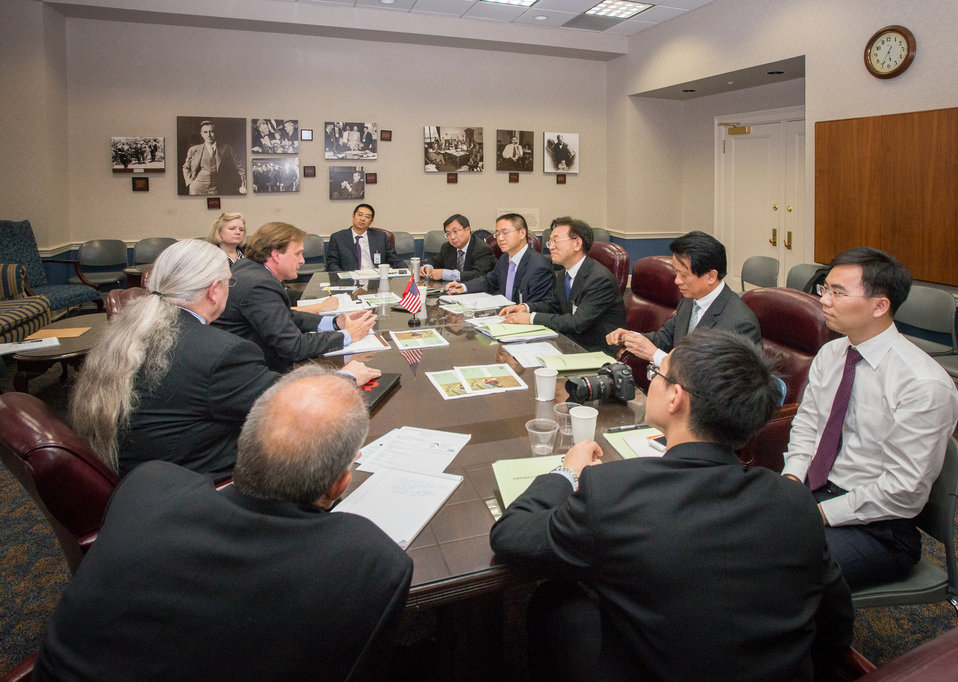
U.S. Department of Agriculture (USDA) Under Secretary for Natural Resources and Environment (NRE) Robert Bonnie and other USDA leaders meet with The People’s Republic of China Ministry of Agriculture (MOA) Vice Minister H.E. Zhang Taolin and the Chinese Agricultural Delegation, at the USDA headquarters Whitten Building, in Washington, D.C., on Friday June 13, 2014. Also in the China delegation is MOA Department of Finance Director-General Li Jianhua, Department of International Cooperation Deputy Director-General Xie Jianmin and Wei Zhenglin*, General Office Section Chief Jiang Yekui, Department of International Cooperation Program Officer Jin Taicheng, and Center of International Cooperation Service Interpreter Wan Ye. Bonnie’s group includes Natural Resources and Environment (NRE) Deputy Under Secretary Butch Blazer, Office of the Chief Economist (OCE) Climate Change Program Director William Hohenstein, Natural Resources Conservation Service (NRCS) Science and Technology Deputy Chief C. Wayne Honeycutt, Ph.D., USDA Foreign Agricultural Service (FAS) Associate Administrator Suzanne Palmieri, NRCS Farm Bill Programs Assistant State Conservationist Gerald L. Roach, and Forest Service (USFS) and International Programs Asia Program Specialist Darcy Nelson and FAS Office of Country And Regional Affairs (OCRA) China and Hong Kong Desk Officer Lauren McGraw.